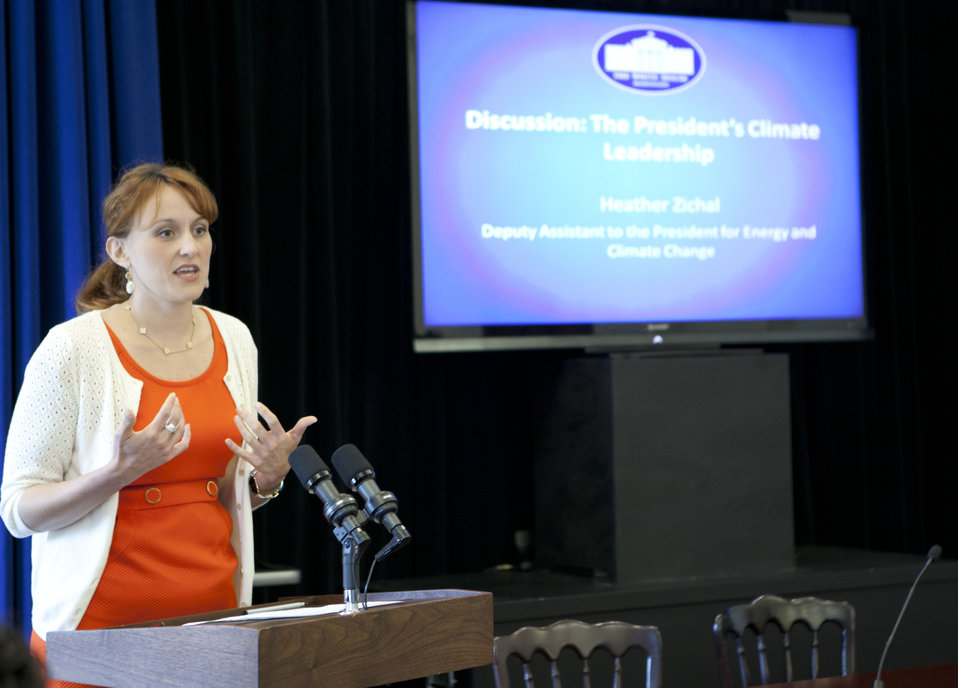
White House Leadership Summit on Women, Climate and Energy

Heather Zichal, Deputy Assistant to the President for Energy and Climate Change, spoke on the President's Climate Leadership.